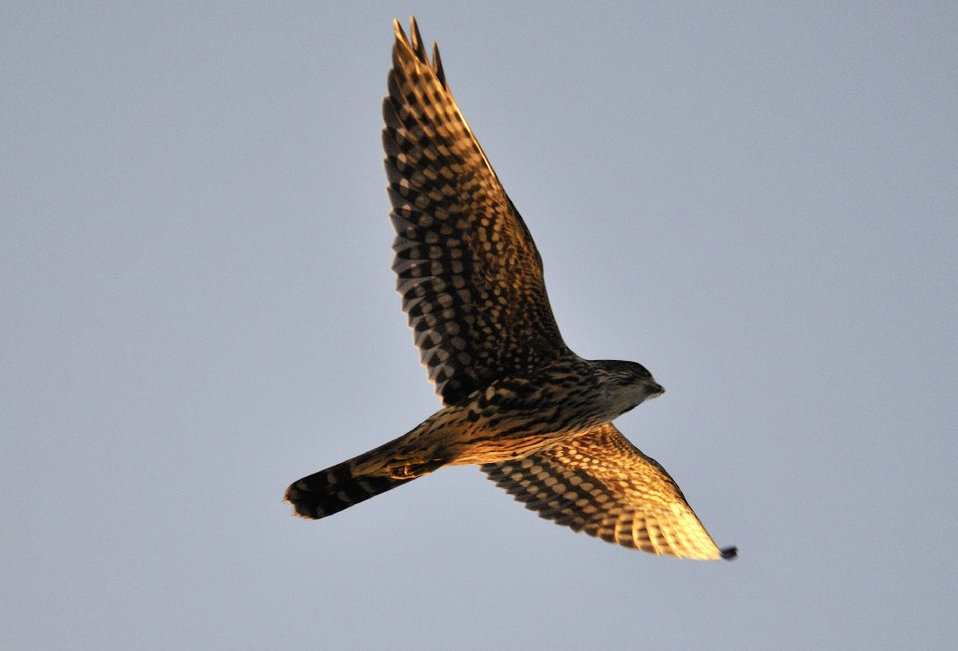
Photo of the Week - Merlin (RI)

Photo of the Week - 10/22/12

Merlin in morning light photographed in Jamestown, RI.